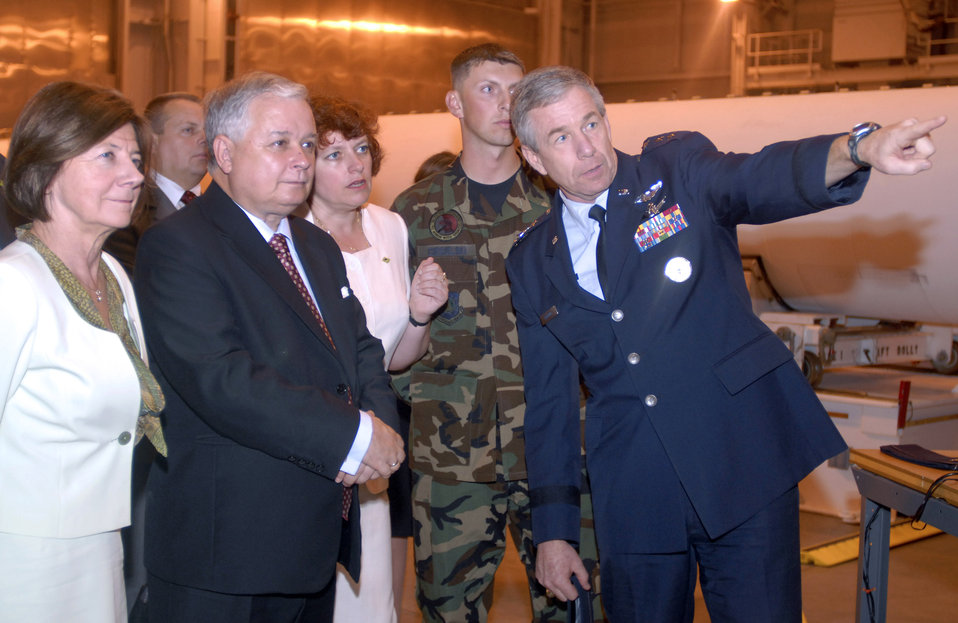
Polish president visits Vandenberg's missile sites

Polish President Lech Kaczynski and his wife, Maria Kaczynski, listen as Lt. Gen. Henry A. Obering III gives a July 18 tour of Vandenberg Air Force Base, Calif. The purpose of the tour was to highlight missile defense facilities located on the base and meet with Missile Defense Agency officials. General Obering is the director of the Missile Defense Agency.